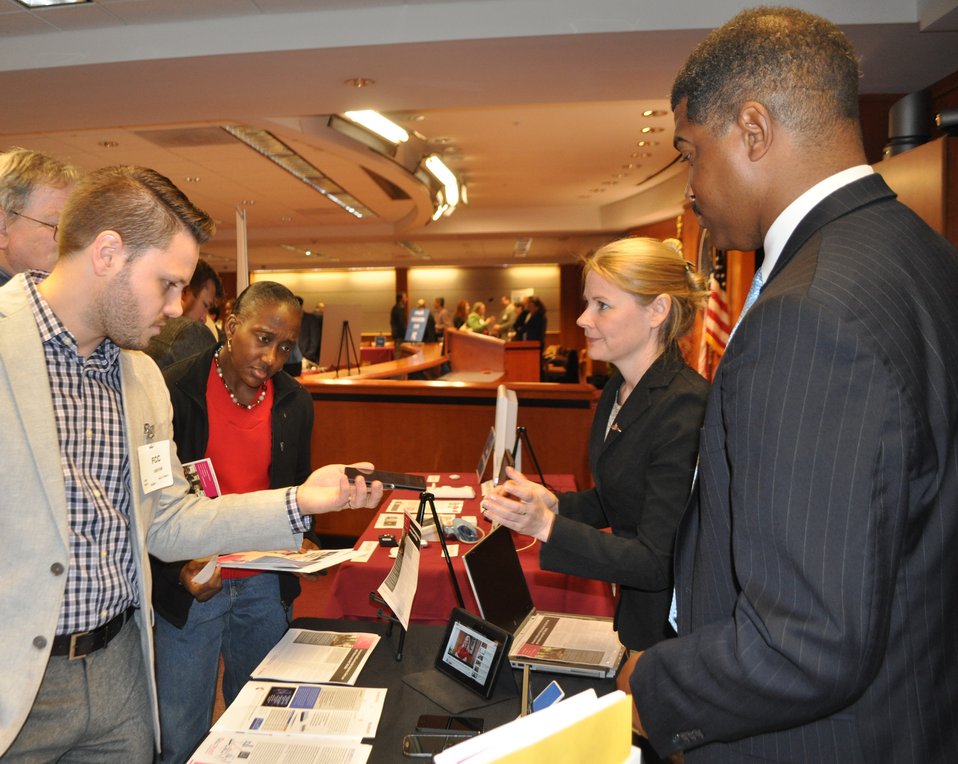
12.6.13 mHealth Innovation Expo

FCC mHealth Innovation Expo.